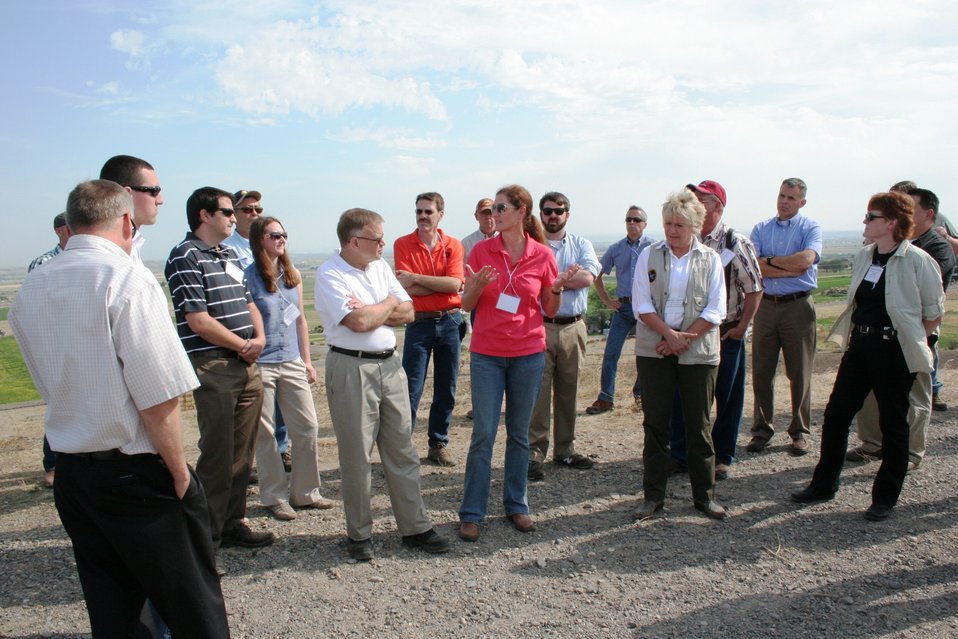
On the Road with Mike Taylor

FDA Deputy Commissioner Michael Taylor (center left foreground) talks with Katy Coba, Director of the Oregon Department of Agriculture. Mike and colleagues started a five-day tour of the Pacific Northwest on Sunday, Aug. 11, 2013 -- visiting Idaho, Oregon and Washington -- to get a first-hand look at produce production and irrigation operations, and to discuss the proposed Produce Safety Rule with growers, food industry representatives and state officials. For more about Mike's multi-region tour, read these FDA Voice blog posts:

• Hearing the Concerns of Maine Growers Striving for Agricultural Diversity
• On the Road with Mike Taylor: Touring the Pacific Northwest
• On the Road with Mike Taylor, Day 2: Frank Talk in Farm Country
• On the Road with Mike Taylor, Day 3: Families and Partnerships
• On the Road with Mike Taylor, Day 4: Looking to the Future